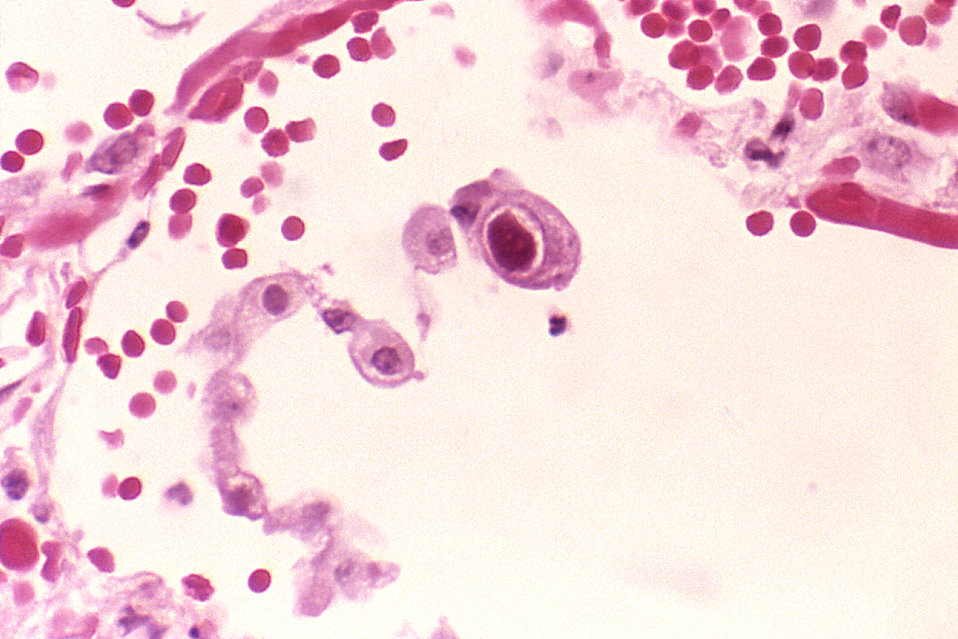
Active cytomegalovirus infection of lung in AIDS.